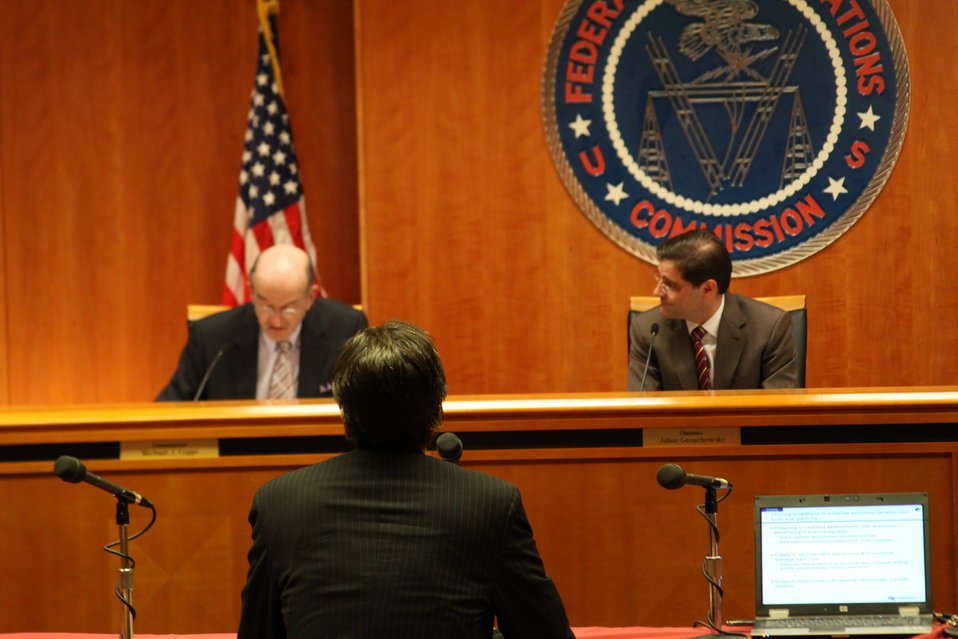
Open Commission Meeting - 2/18/2010

The Federal Communications Commission will hold an Open Meeting in Washington, DC. on February 18, 2010, which will include the following items:

E-Rate: An Order and Notice of Proposed Rulemaking to enable schools that receive funding from the E-Rate program to allow members of the general public to use the schools' Internet access during non-operating hours at no additional cost to the Universal Service Fund. This order and notice do not permit or require any changes to E-Rate applications due on February 11, 2010; Ex Parte Reform: A Notice of Proposed Rulemaking to improve the transparency and effectiveness of the FCC's decision-making process by reforming the ex parte rules; Procedural Reform: A Notice of Proposed Rulemaking to enhance the efficiency, openness, and transparency of the Commission's proceedings by improving and modernizing certain organizational and procedural rules; National Broadband Plan Status Report: Commission staff will report on the status of the National Broadband Plan, providing a framework for the national purposes portion of the Plan.